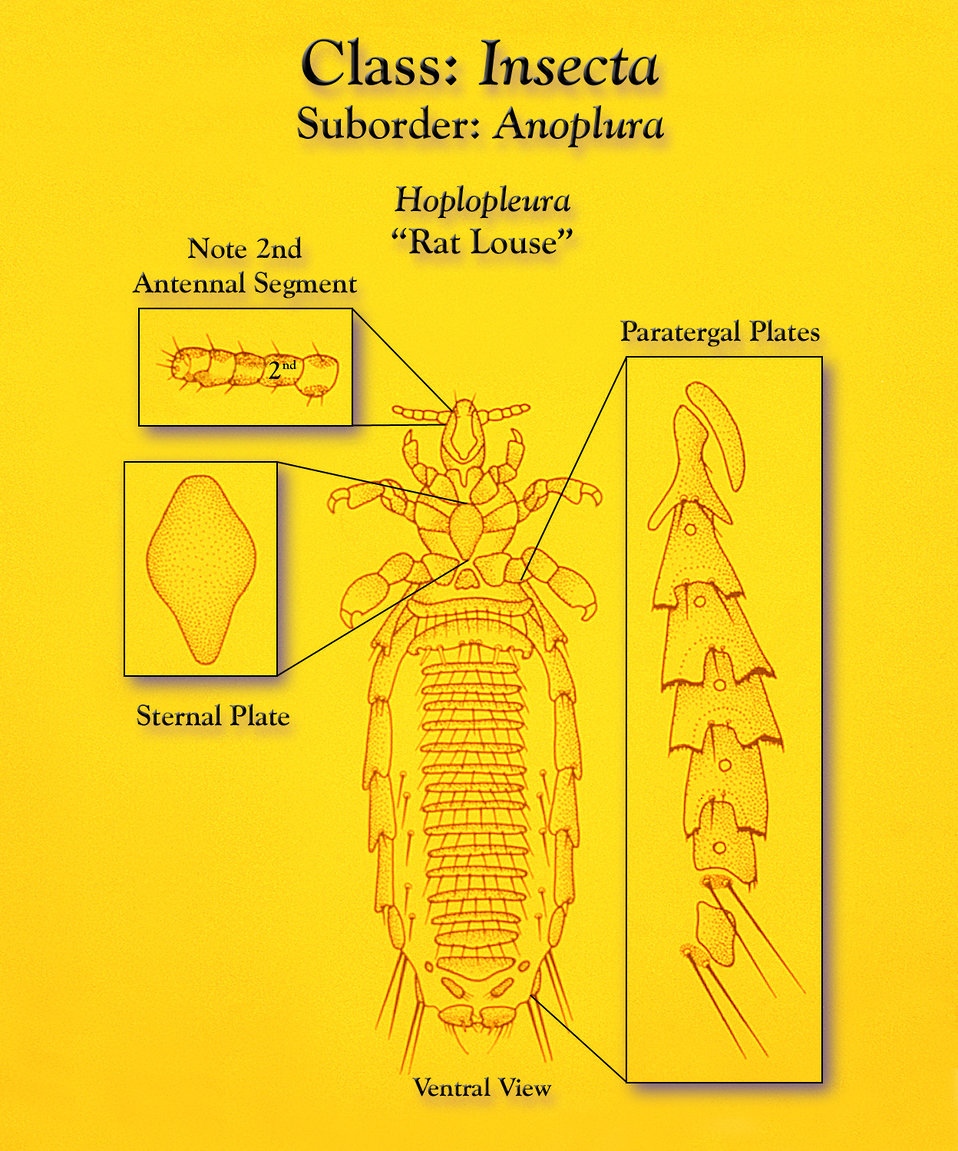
This illustration depicts a 'rat louse', which is a member of the genus, Hoplopleura from a ventral view, as well as three insets that highlight three distinct morphologic features unique to this genus.